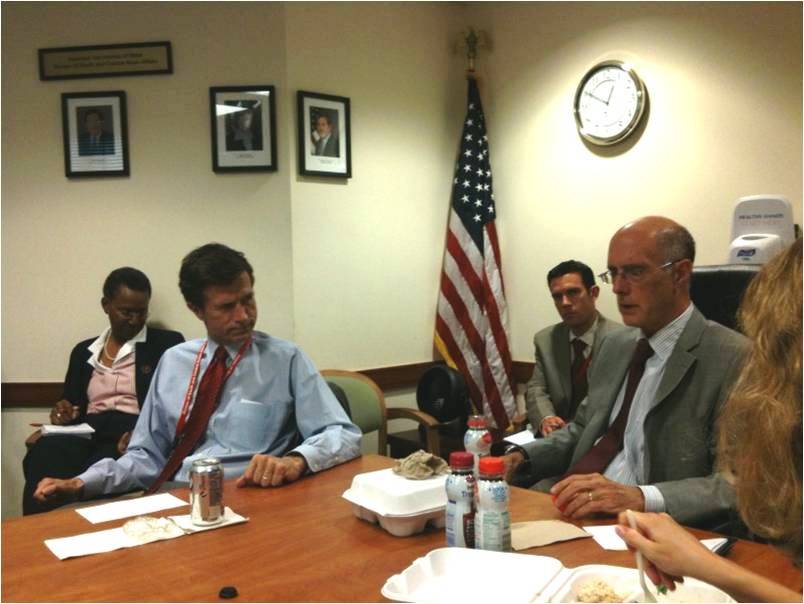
Assistant Secretary Blake Hosts a Brown Bag Lunch With Brookings President Strobe Talbott

U.S. Assistant Secretary for South and Central Asian Affairs Robert O. Blake hosts a brown bag lunch featuring Brookings President Strobe Talbott with the Bureau of South and Central Asian Affairs at the U.S. Department of State in Washington, D.C., on July 13, 2010.